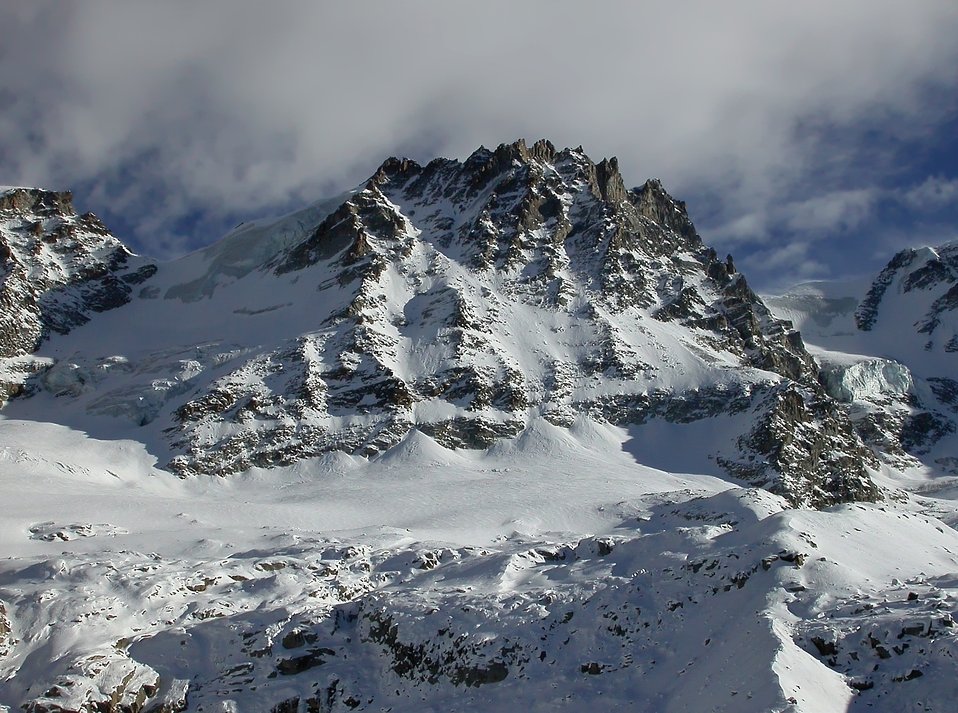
Piccolo Paradiso face west - Graian Alps - Italy Italiano: Piccolo Paradiso versante Ovest - Alpi Graie - Italia